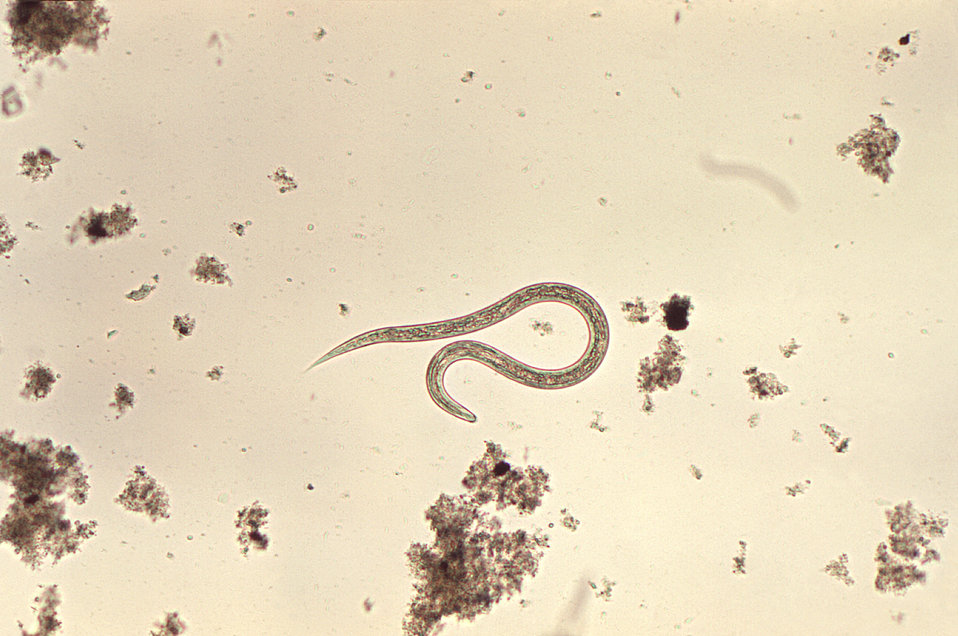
Magnified 100X, this whole mount photomicrograph revealed some of the ultrastructural morphology exhibited by a hookworm filariform larva.What is hookworm?